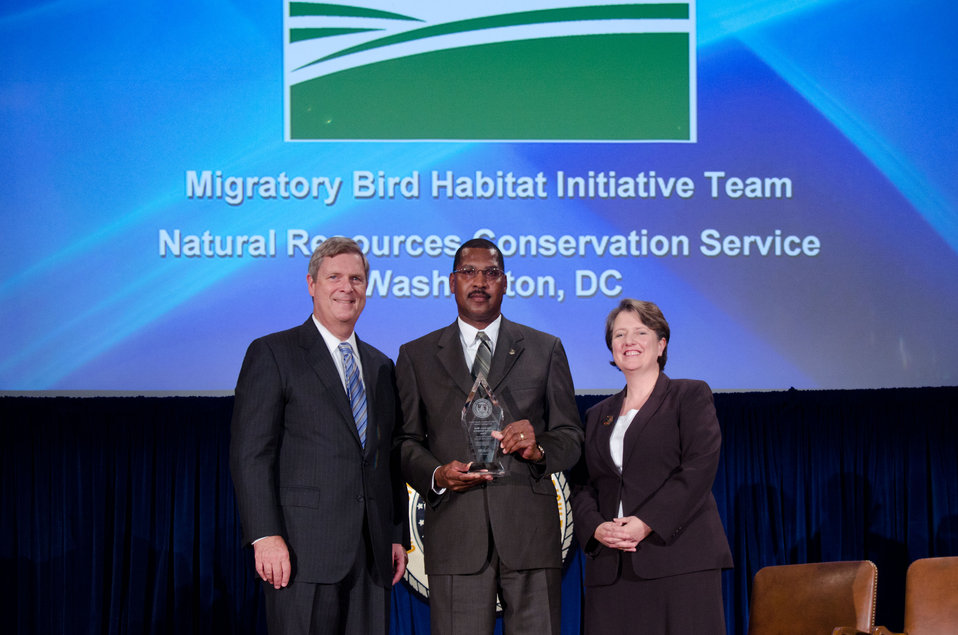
Agriculture Secretary Tom Vilsack (l) and Deputy Secretary Kathleen Merrigan (r), presents the Ensuring Our National Forests and Private Working Lands Are Conserved, Restored, and Made More Resilient To Climate Change, While Enhancing Our Water Resources Award to Migratory Bird Habitat Initiative Team, Natural Resources Conservation Service, Washington, DC. Dave White, Group Leader. For developing and implementing the Migratory Bird Habitat Initiative, providing needed food and nesting areas for thousands of migratory birds impacted by the 2010 Deep Water Horizon Oil Spill. On Wednesday, September 14, 2011 in the Jefferson Auditorium at the US Department of Agriculture in Washington, DC.